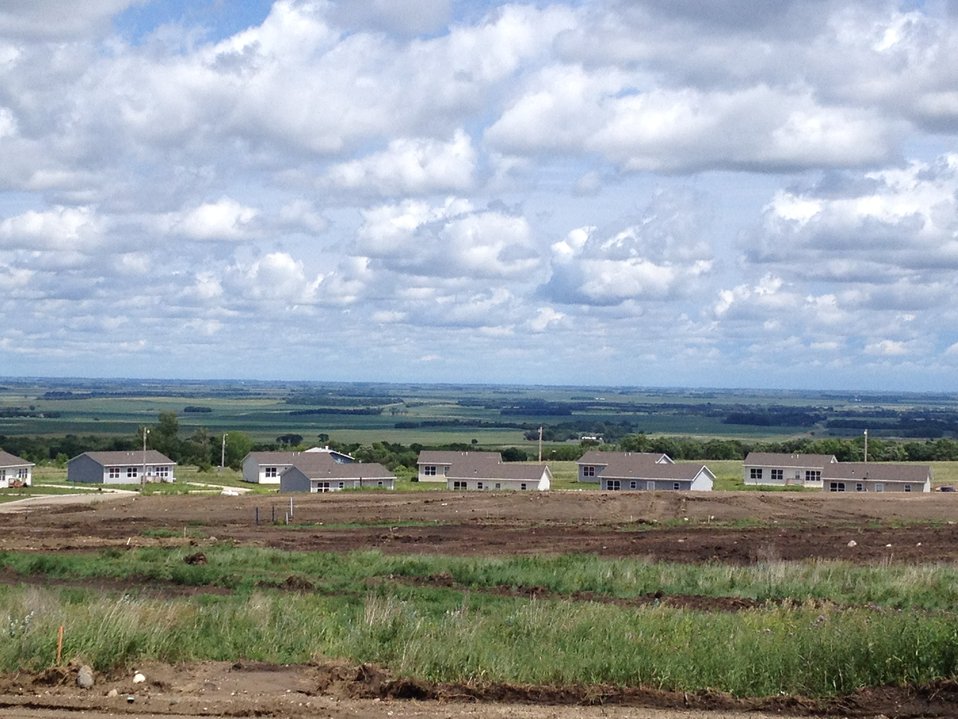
longhollowsite

The sun shines down on the Long Hollow Housing Development Sisseton-Wahpeton Oyate Tribe of the Lake Traverse Reservation in northeast SD on June 20, 2012. The U.S. Department of Agriculture’s (USDA) Rural Development (RD) has partnered with the Sisseton-Wahpeton Oyate Tribe to improve schools, health care, transportation, water systems, single family homes, and multi-family rental properties all of which increase economic opportunity for the Tribe and its members.